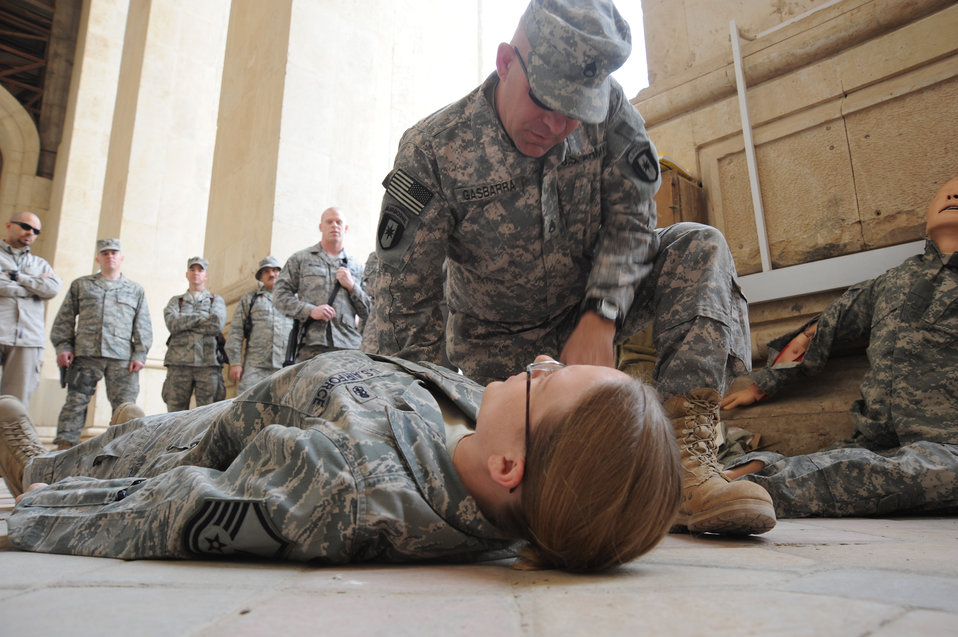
Air Force and Army jointly save lives

Army Staff Sgt. Albert Gasbarra demonstrates how to approach an injured individual during the combat lifesaver training course Dec. 29, 2009, at Baghdad, Iraq. The students were given opportunities to practice lifesaving skills during the exercise portion of the course. Sergeant Gasbarra is the NCOIC of the troop medical clinic for the 550th Aerial Support Medical Company.